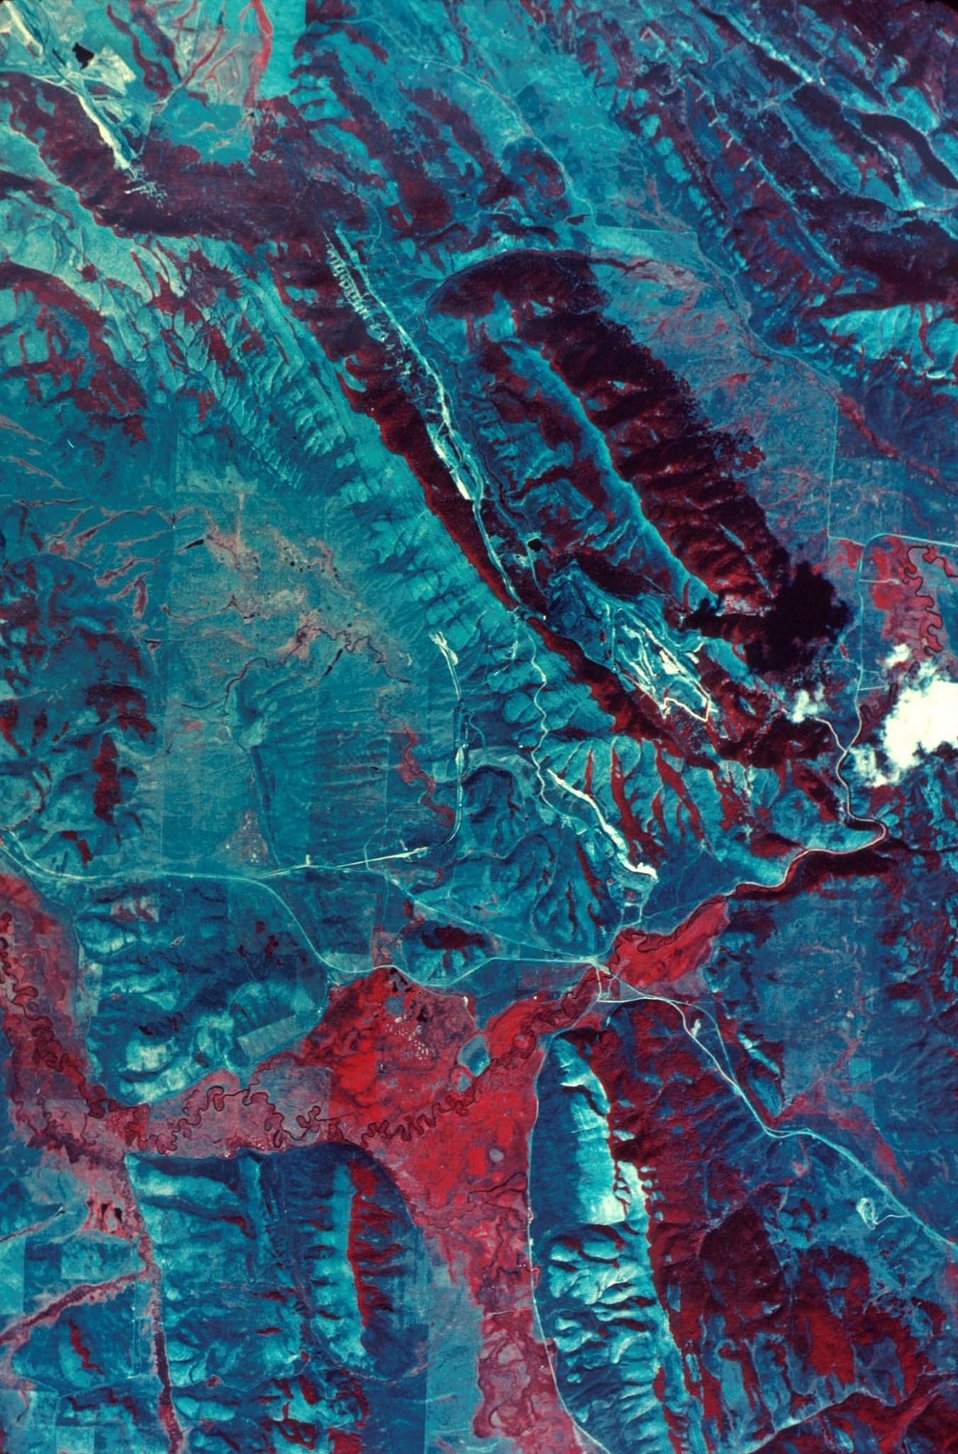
False-Color Infrared Aerial Wooley Valley Mine Pocatello Field Office USRD Upper Snake River District